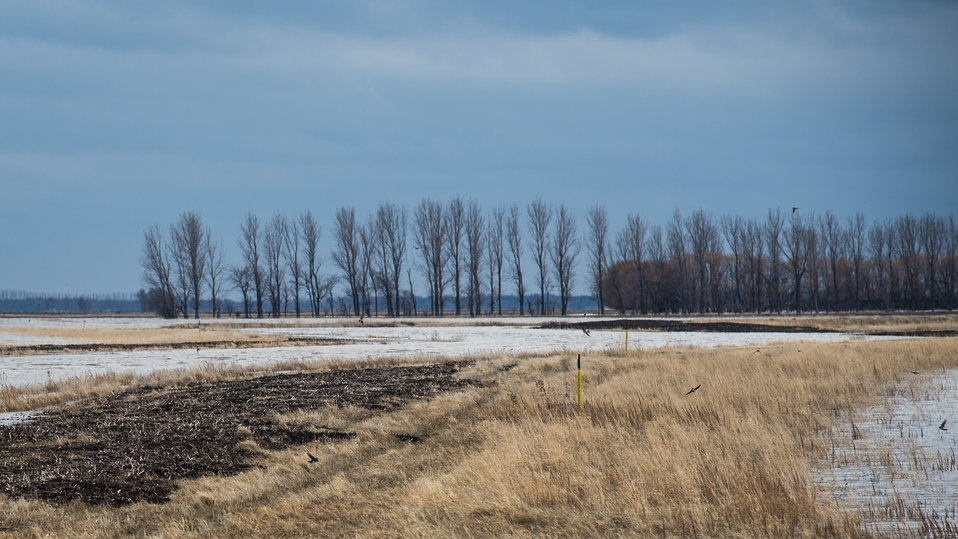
Erosion is seen in the distance on farmland owner Neil Hanson's U.S. Department of Agriculture (USDA) Emergency Watershed Protection Flood Plain Easement, located east of Bowesmont, in the Red River basin of ND, Wednesday May 1, 2013. To learn about the Red River Basin Initiative, see www.mn.nrcs.usda.gov/news/features13/RRBI.html.